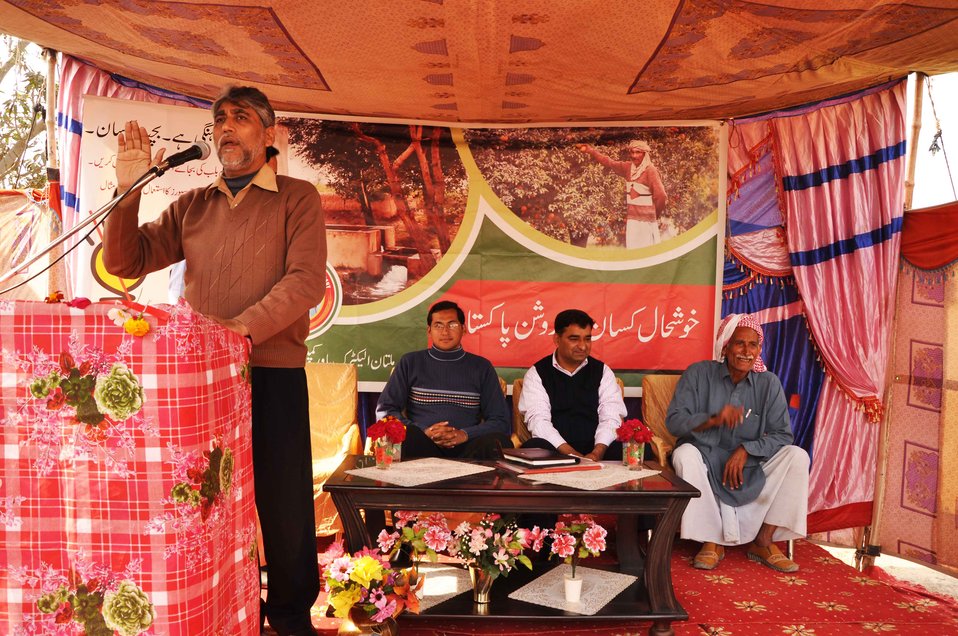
USAID Empowering Farmer of MEPCO Service Area

To cope with the electricity shortfall and power theft in MEPCO's rural areas, two gathering for farmers were organized at Jampur and Mailsi by USAID Power Distribution Program's Communications Team in the second last week of January. More than 600 farmers and local female residents attended the session where MEPCO Consumer Outreach Officer Asghar Baloch highlighted the causes of the power shortage and suggested possible remedies. XEN Naeem Samtia, Local Support Organization Mola Buksh, Deputy Director Technical Shahid Nazeer, Deputy Director Procurement Khawaja Aurangzaib and Public Relations Officer Jamshaid Niazi,shared various energy conservation tips that can be adopted in everyday life. Participants were also informed on the use of efficient tubewell motors,and how they can save electricity and lower bills. The events received coverage in Daily Pakistan, Ausaaf, Crime, Nawa-e-Waqt and various other local newspapers.